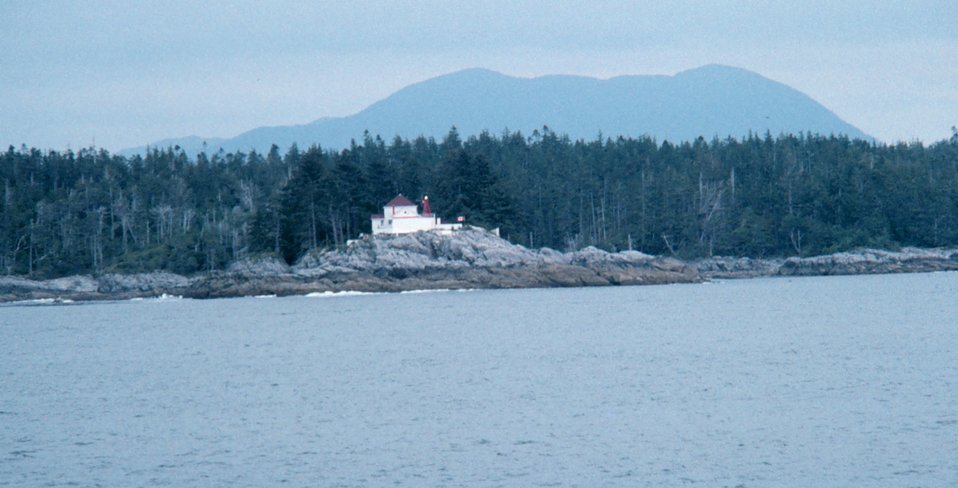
British Columbia lighthouse